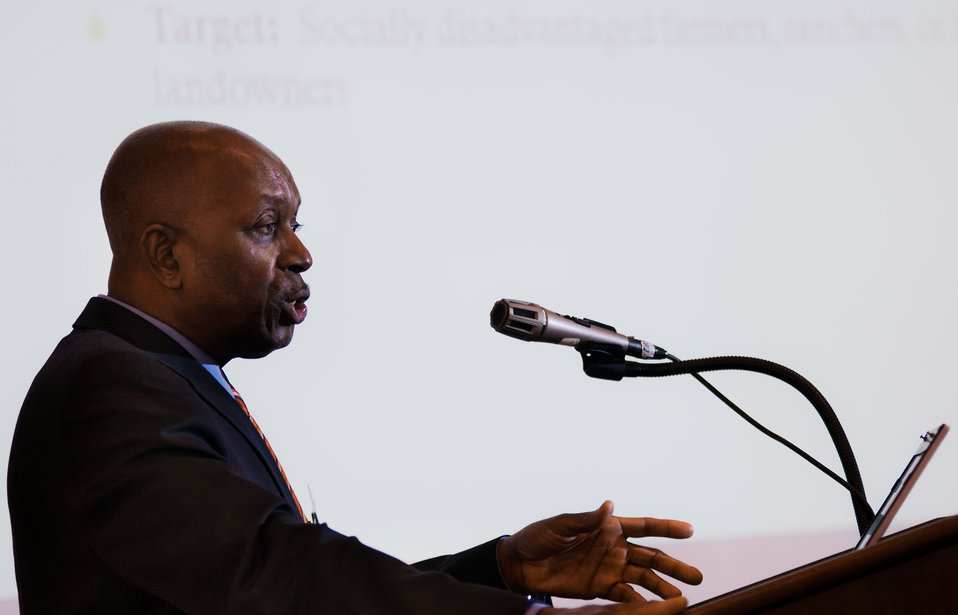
Delaware State University, College of Agriculture & Related Sciences Associate Dean Albert E. Essel, from Dover, DE, speaks on Resources Available to the Small and Disadvantaged Farmer during the U.S. Department of Agriculture (USDA) 2013 Agricultural Outlook Forum held at the Crystal Gateway Marriott Hotel in Arlington, VA on Friday, Feb. 22, 2013. The breakout session’s general topic is Risk Management for Small and Socially Disadvantaged Farmers a profile of small and disadvantaged farmers based on the recent Census of Agriculture to identify the size and current economic and demographic trends of these farmers. The discussion also identified risks for these farmers, the need to manage those risks for longer-term viability/sustainability, the role of the public sector, and the resources available for small and disadvantaged farmers in coping with risk. USDA photo by Lance Cheung.
The presentation is available at www.usda.gov/oce/forum/presentations/Essel.pptx.